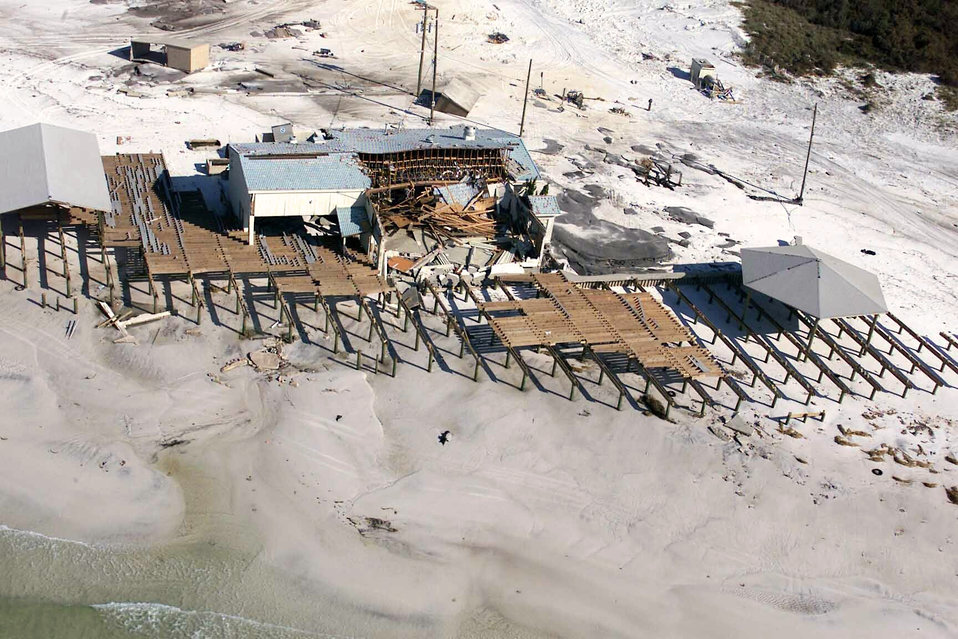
2005 hurricane season begins

EGLIN AIR FORCE BASE, Fla. -- Hurricane Ivan severely damaged the community center beach house here. The beach house provides beach access for servicemembers and their families.